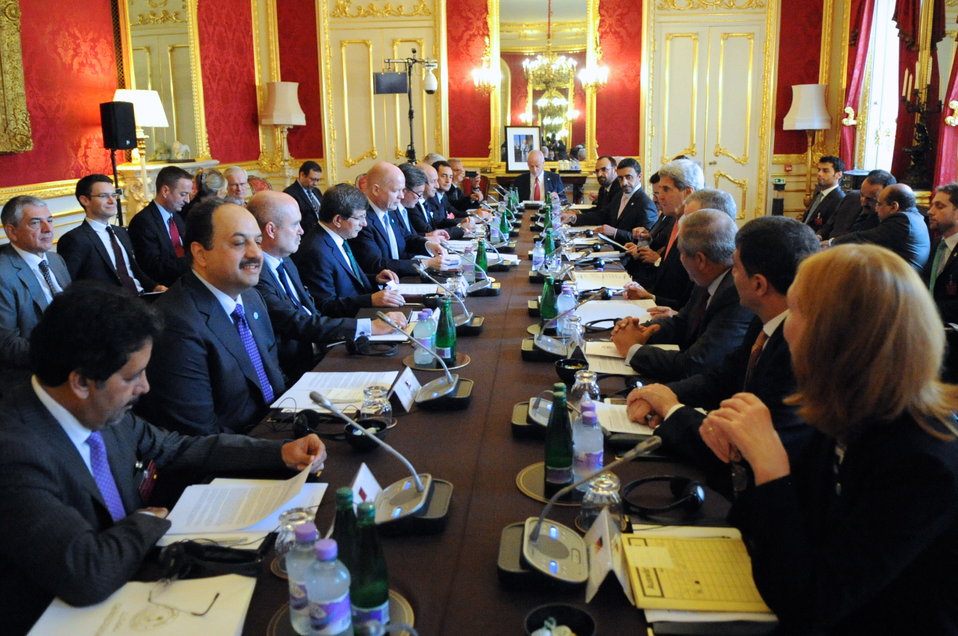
London 11 Group Meets in London To Discuss Syria

U.S Secretary of State John Kerry, seated across from British Foreign Secretary William Hague, meets with his counterparts from Egypt, France, Germany, Italy, Jordan, Qatar, Saudi Arabia, Turkey, and the United Arab Emirates before the London 11 to discuss Syria in London, United Kingdom on October 22, 2013.